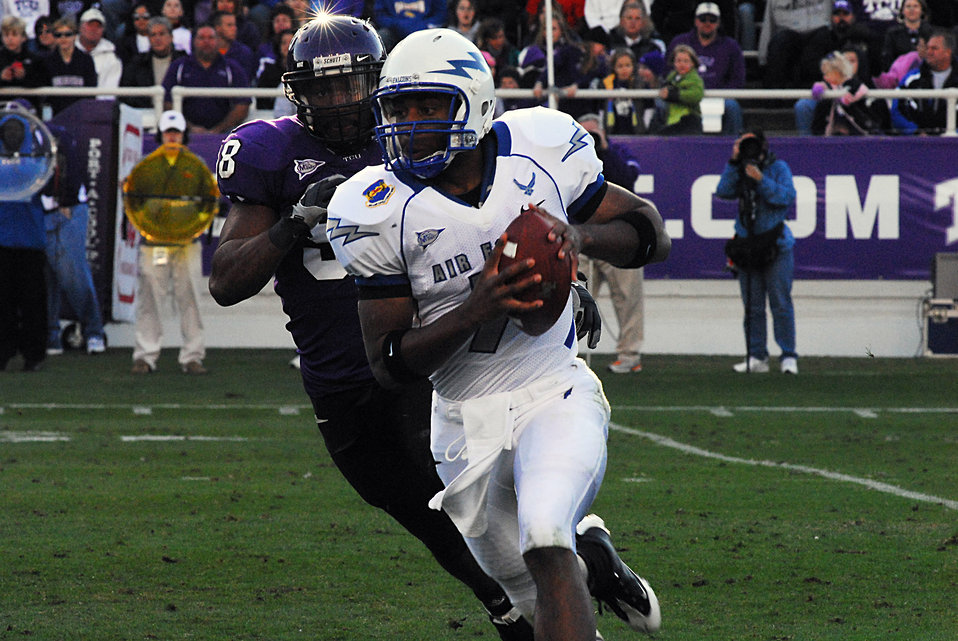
TCU thrashes Falcons

Air Force Falcon quarterback Tim Jefferson is chased out of the pocket by Texas Christian University defensive end Jerry Hughes Nov. 22 in Amon G. Carter Stadium in Fort Worth, Texas. The Frogs beat the Falcons, 44-10.